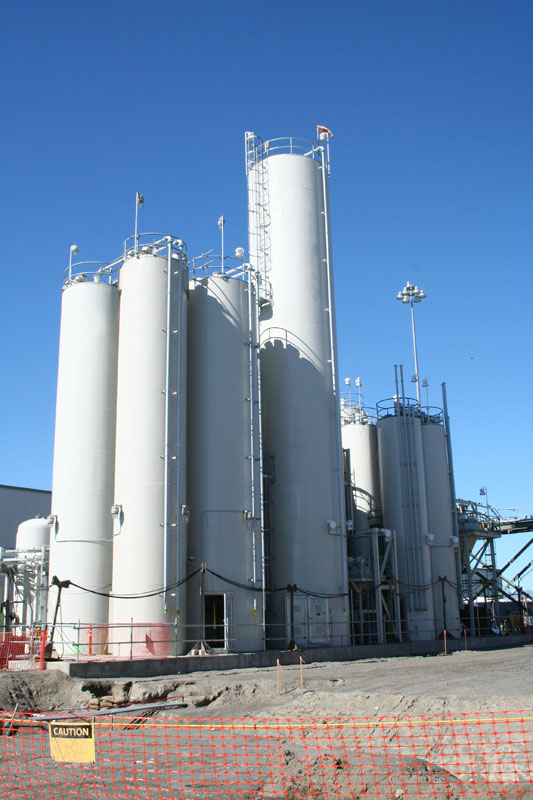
The glass former silos will hold glass forming agents that will be mixed with waste